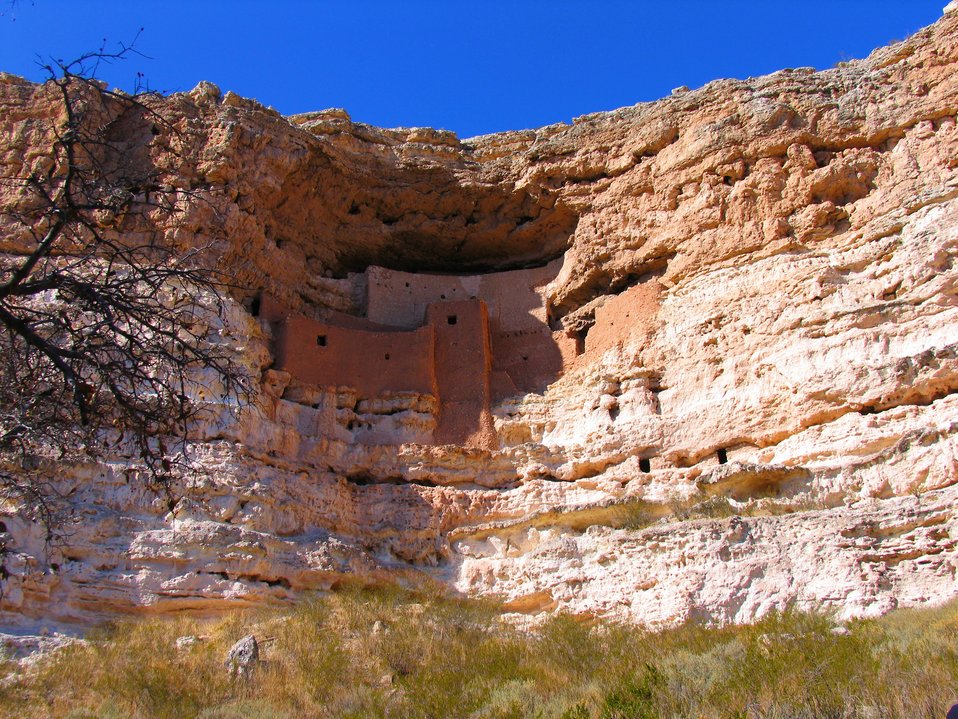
Montezuma's Castle cliff dwellings